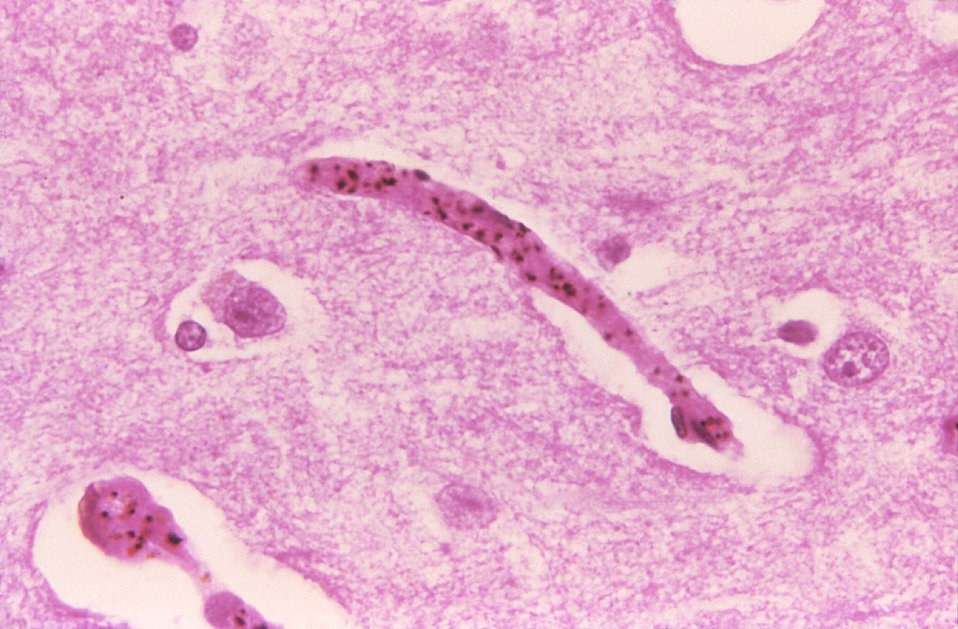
Histopathology of malaria pigment in brain capillaries.